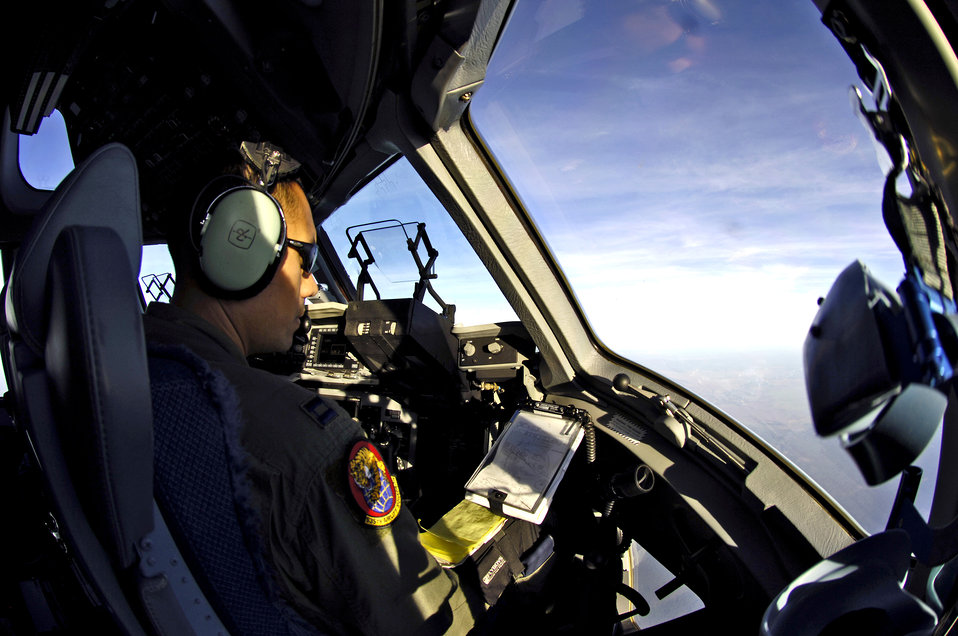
Australians learn from U.S. C-17 mission

Capt. Alfred Basioa flies a C-17 Globemaster III to Darwin, Australia, on Thursday, June 1, 2006. Captain Basioa is with the 535th Airlift Squadron at Hickam Air Force Base, Hawaii. Two C-17s from Hickam are helping the Australian Defense Force reposition its forces to better support peace operations in East Timor.